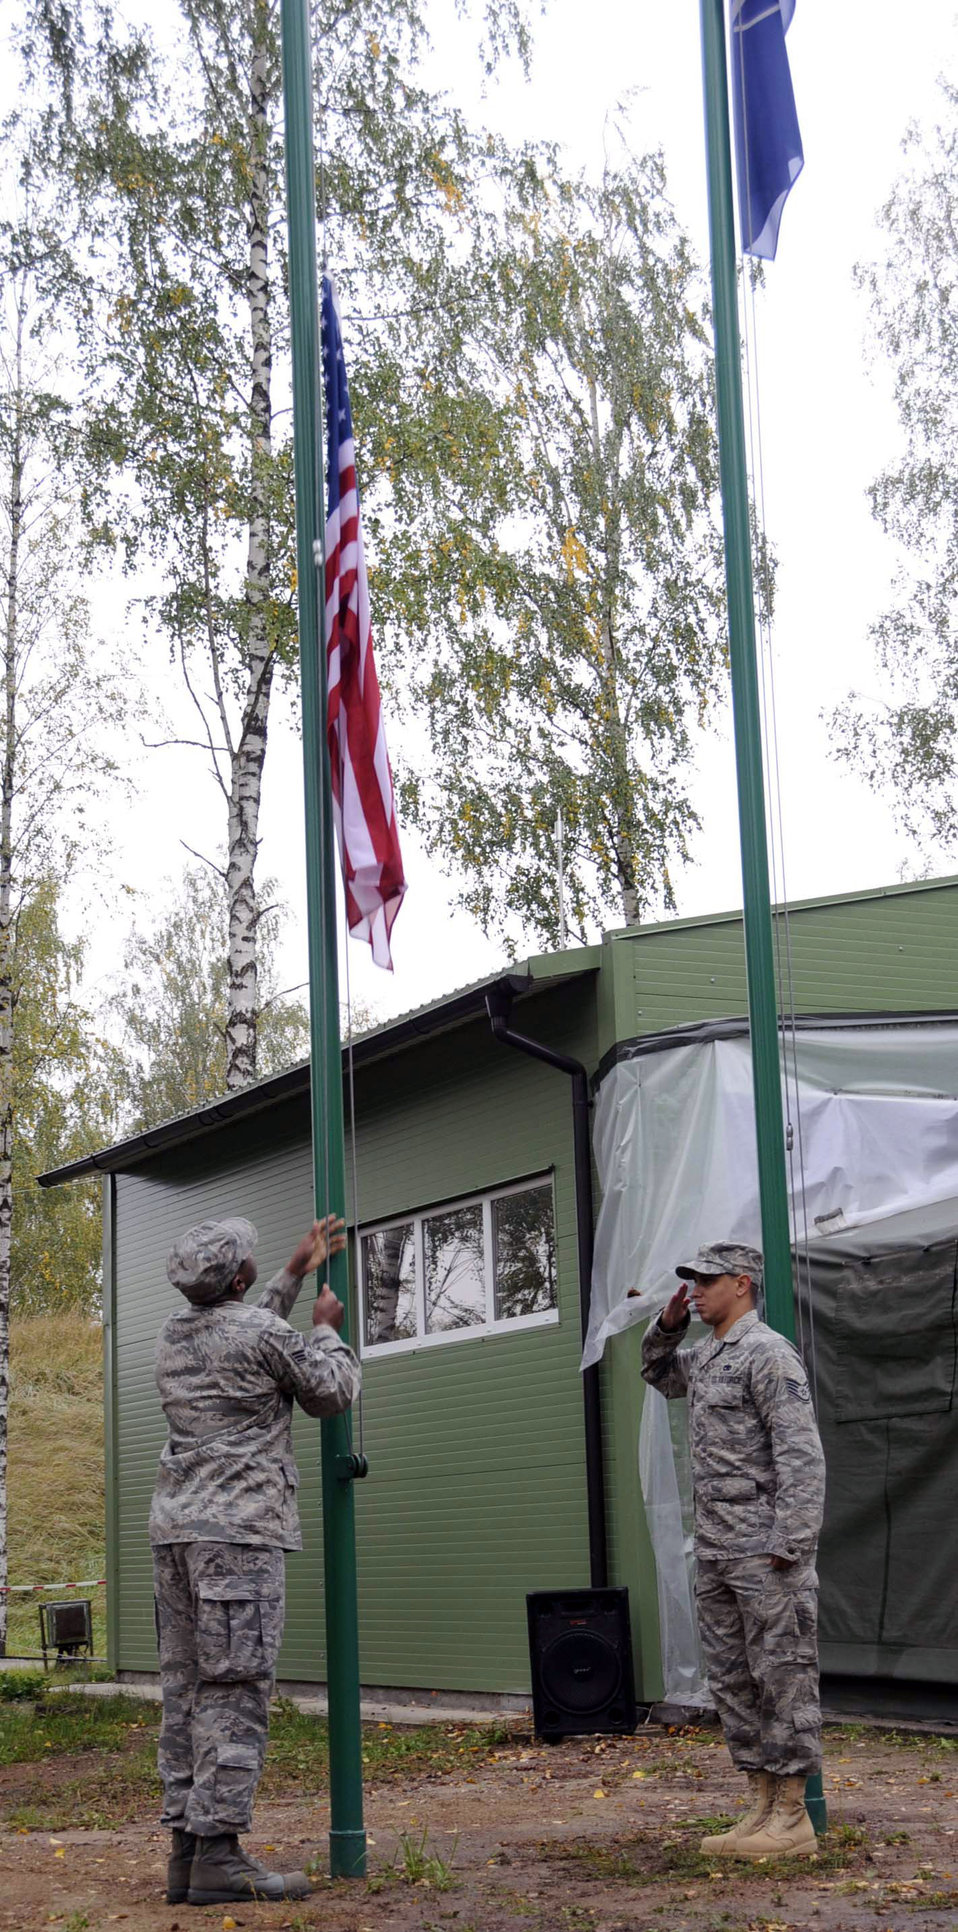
Ceremony marks beginning of U.S. mission in Baltics

Senior Airman Antonio Huguley raise the U.S. flag over the Quick Reaction Facility as Staff Sgt. Raphael Santos-Montanez salutes the colors. The flag raising was a part of the change-over ceremony marking the first day of the U.S. rotation performing the NATO Baltic air policing mission. Airman Huguley is assigned to the 493d Expeditionary Fighter Squadron PERSCO section. Sergeant Santos-Montanez is assigned to the 493d EFS Quality Assurance section.